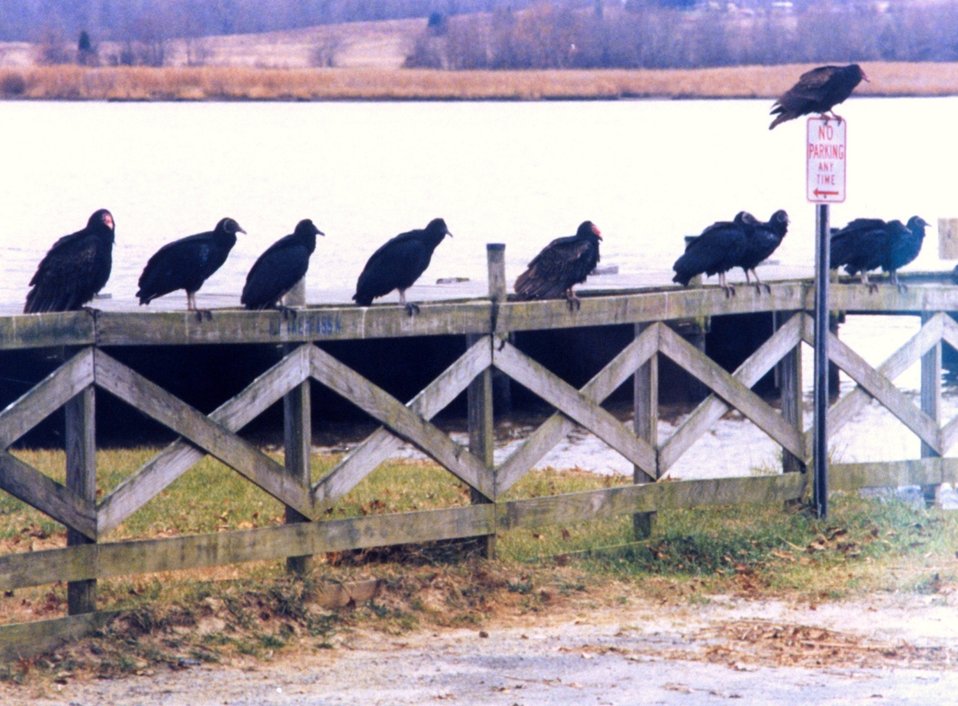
Turkey Vultures and Black Vultures taking a break from searching for carrion on a Patuxent River fence.